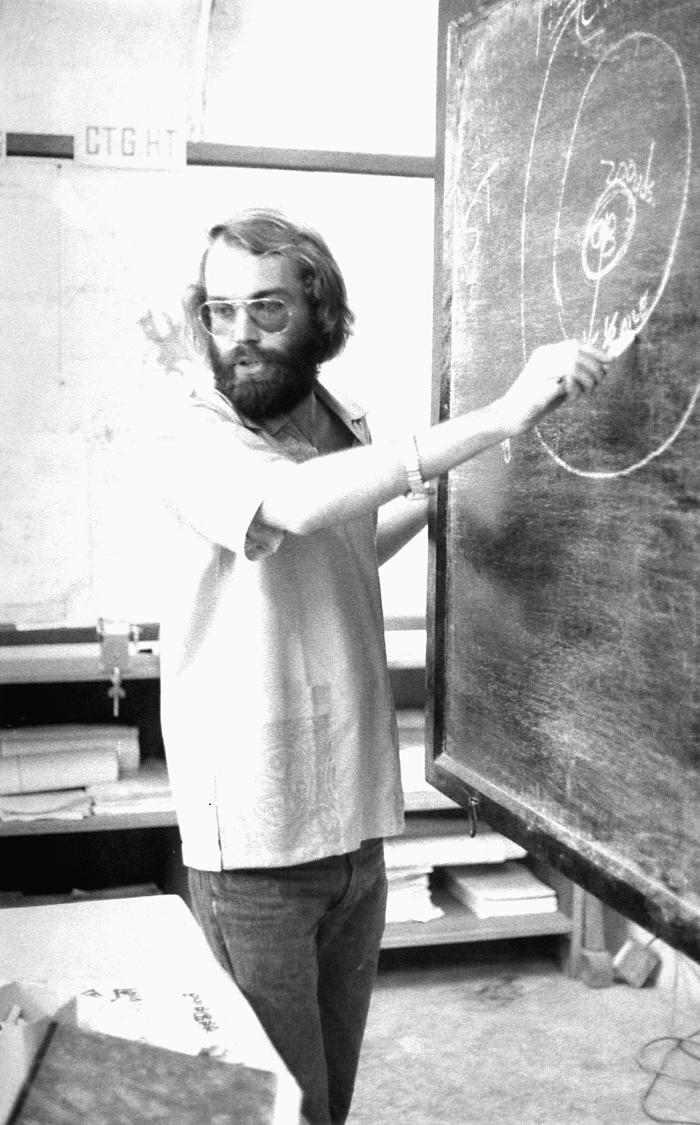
This 1975 photograph depicted a young American volunteer named Marty Lutz, at the blackboard creating a map in order to illustratively demonstrate strategic plans that would eventually lead to the global eradication of smallpox. It was both a local, and international effort that made the eradication campaign a success.